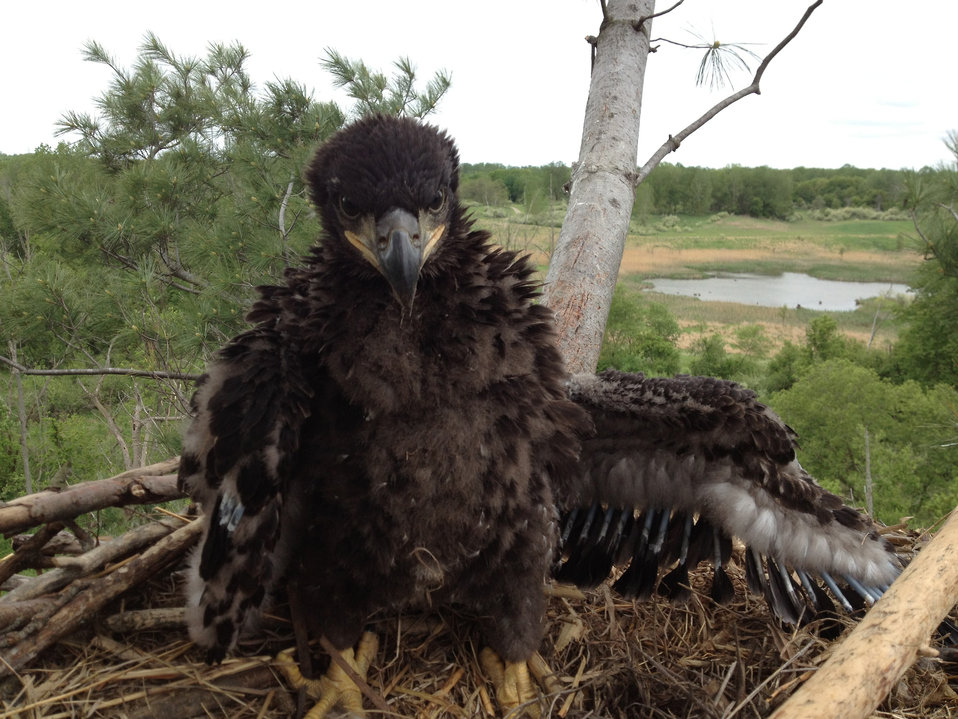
Bald Eagle at 6 Weeks By USFWS; Jeremy N. Moore

6 week old Bald Eagle in nest, Michigan. May 2013.

Photo by USFWS; Jeremy N. Moore